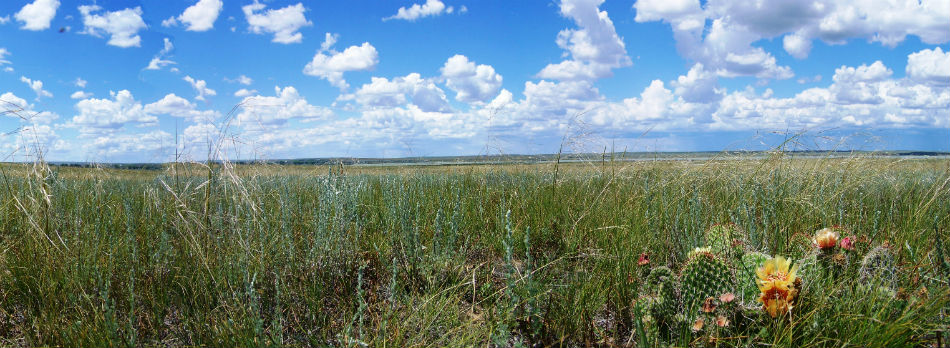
Big sky on Bowdoin NWR

Native prairie on Bowdoin NWR